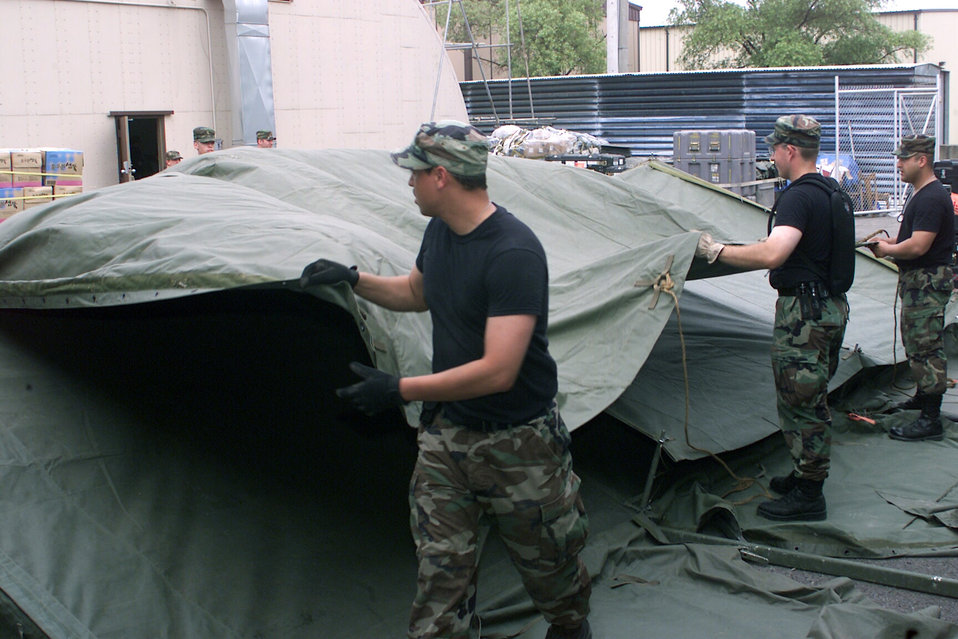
A tents situation

KWANJU AIR BASE, South Korea -- Airmen deployed from Eielson Air Force Base, Alaska, build a tent which will be used for communications equipment storage. A tent city is being prepared for the arrival of the 3rd Air Expeditionary Group.